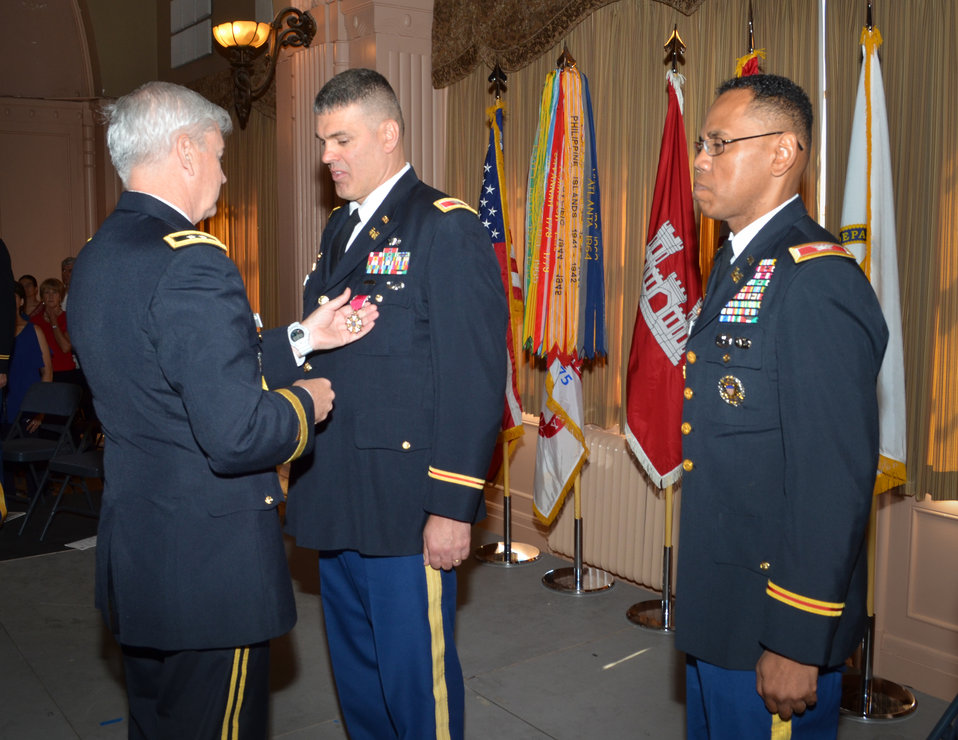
Major Gen. Walsh pins the Legion of Merit medal on Col. Leady

Major Gen. Michael J. Walsh (left), Deputy Commanding General for the U.S. Army Corps of Engineers Civil and Emergency Operations, pins the Legion of Merit medal on Col. William J. Leady during the Sacramento District’s 30th change of command ceremony July 10, 2013 at the Masonic Temple in Sacramento, Calif. Photo cropped for emphasis